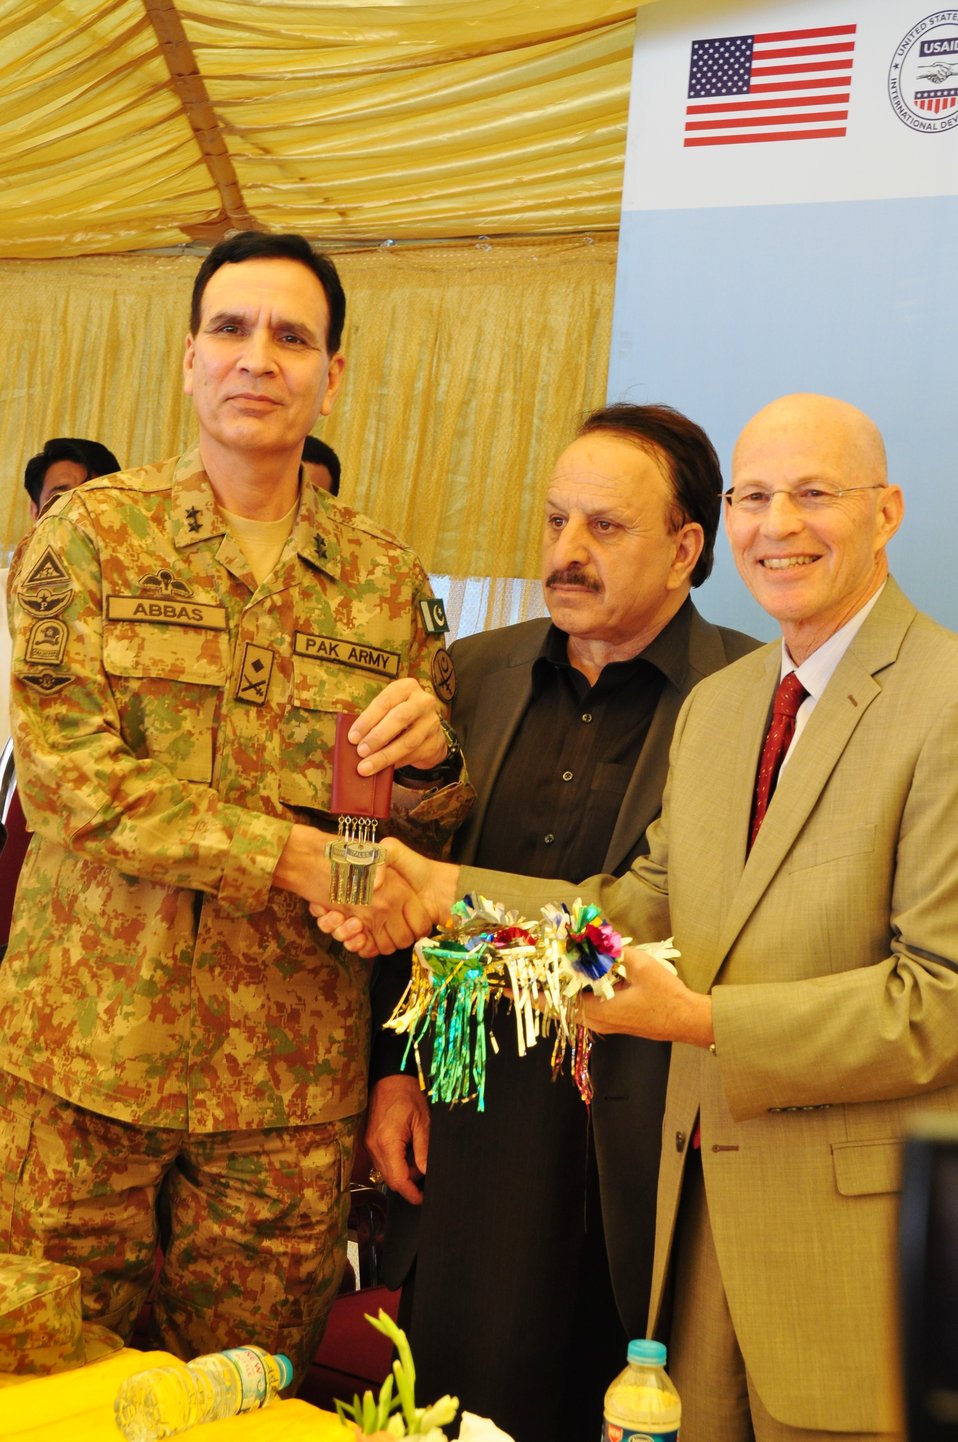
Bagh 06